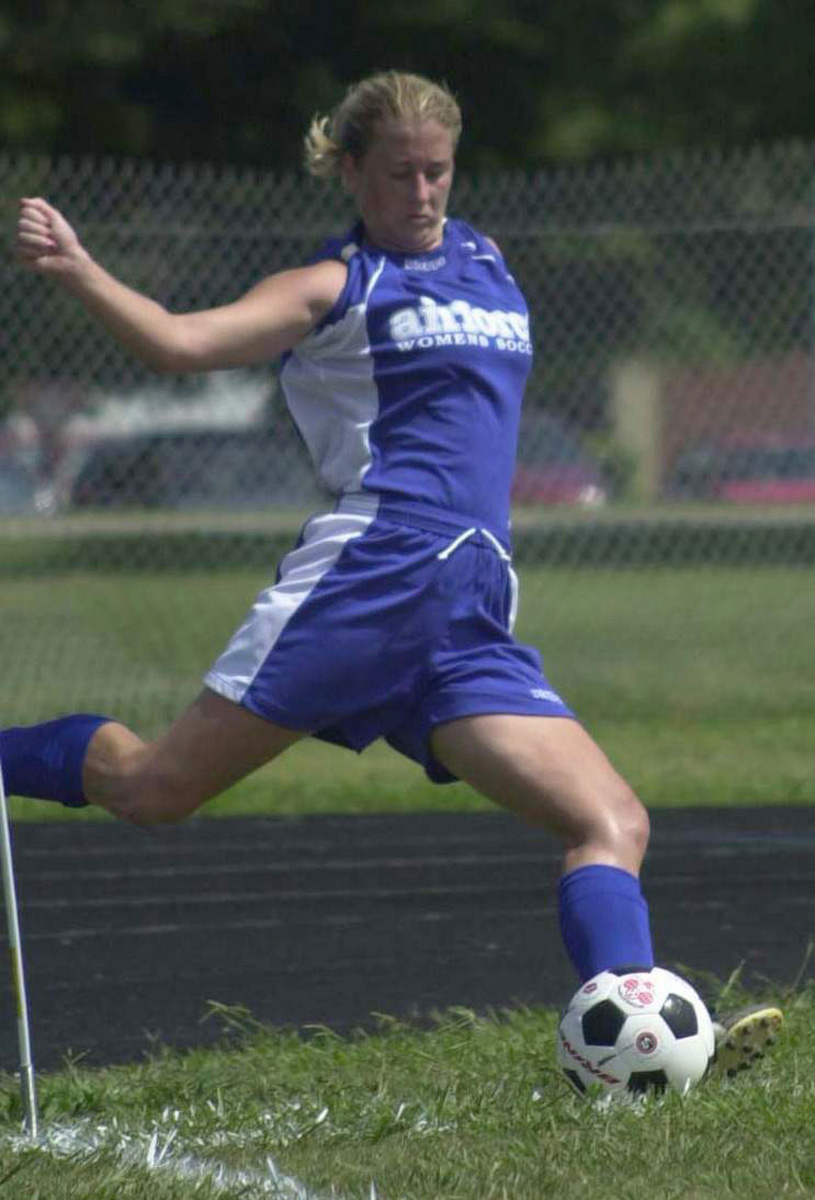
Corner kick

FORT EUSTIS, Va. -- An Air Force soccer player makes a corner kick. The Air Force team recently won the week-long women's Armed Forces soccer championship held here.